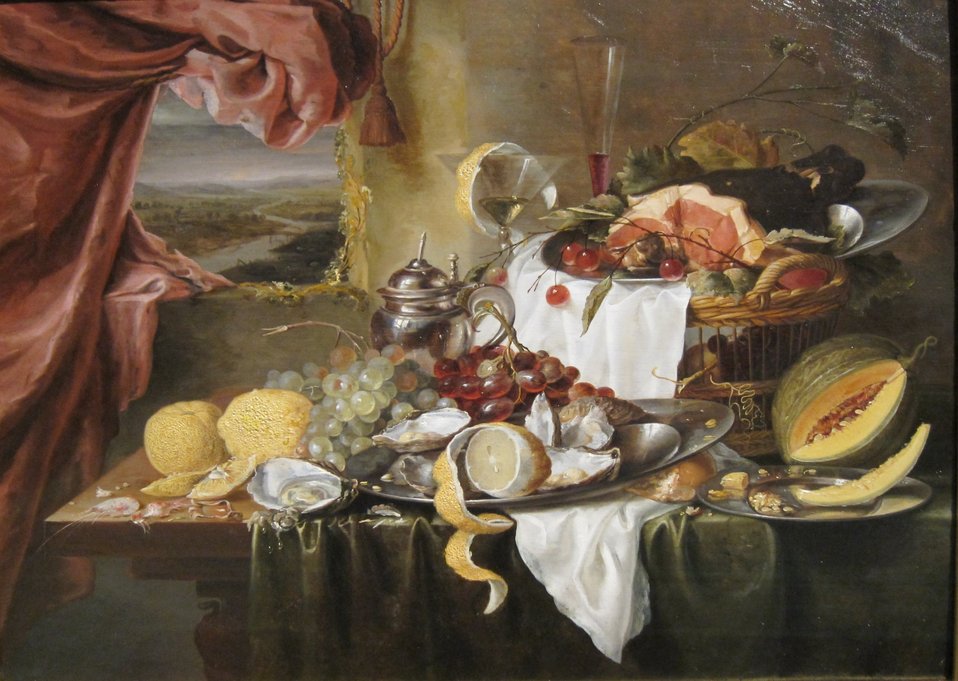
'Still Life with Imaginary View', oil on oak panel painting by Laurens Craen, c. 1645-50, Art Gallery of New South Wales